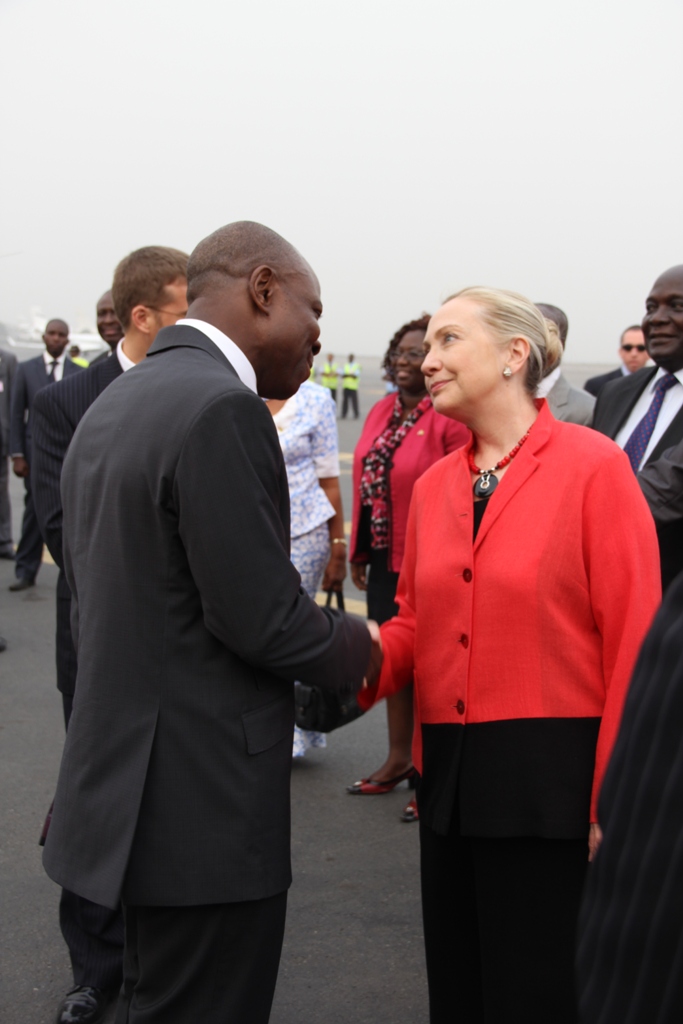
Secretary Clinton Says Farewell to Togolese Prime Minister Houngbo

U.S. Secretary of State Hillary Rodham Clinton says farewell to Togolese Prime Minister Gilbert Houngbo in Lome, Togo, on January 17, 2012.